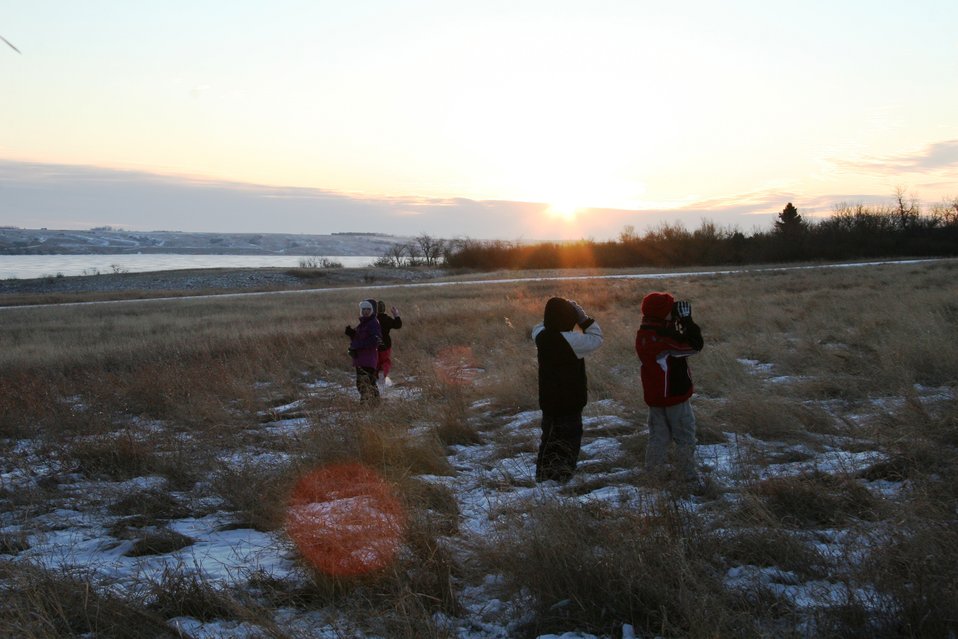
Watching Ring-necked Pheasants Fly Away

The group spotted two ring-necked pheasants in the grass.